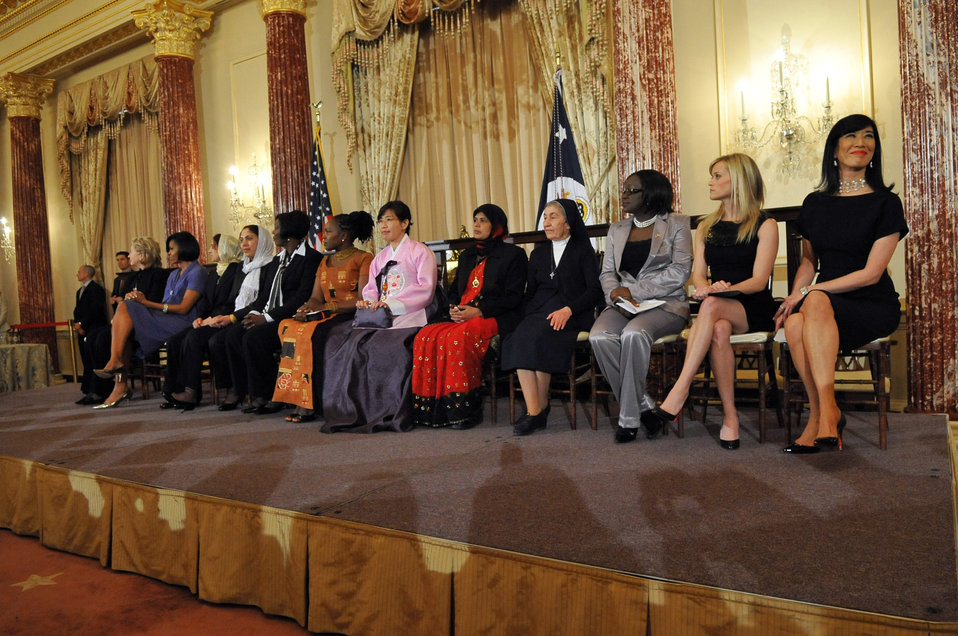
Secretary Clinton and First Lady Michelle Obama With Honorees

U.S. Secretary of State Hillary Rodham Clinton, First Lady Michelle Obama, Reese Witherspoon, Andrea Jung, and the honorees listen as Ambassador Verveer speaks at the 2010 International Women of Courage Awards at the U.S. Department of State, Washington, D.C. March 10, 2010.